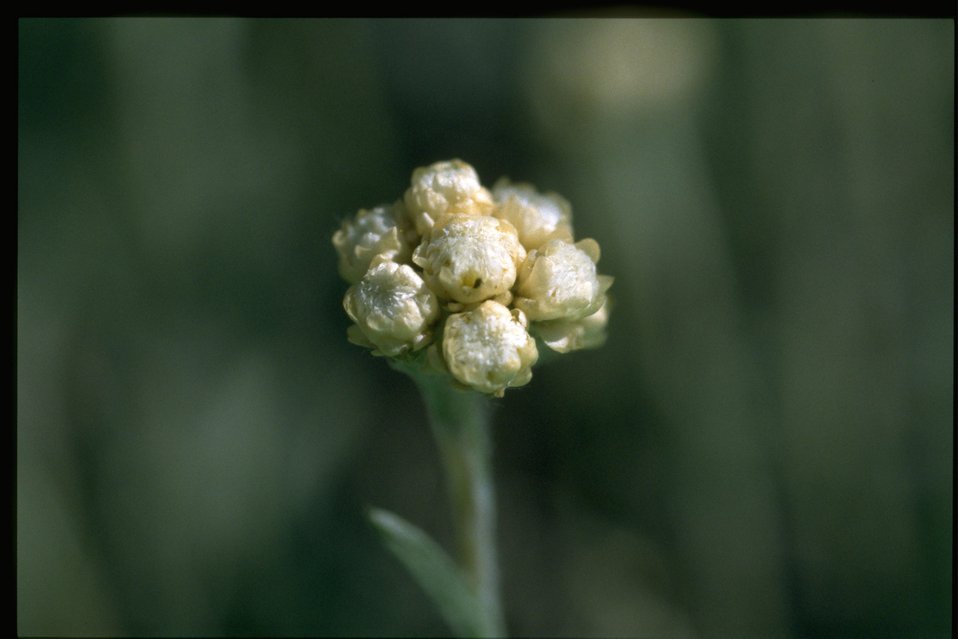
Closeup shot of littleleaf pussytoes (Antennaria microphylla).